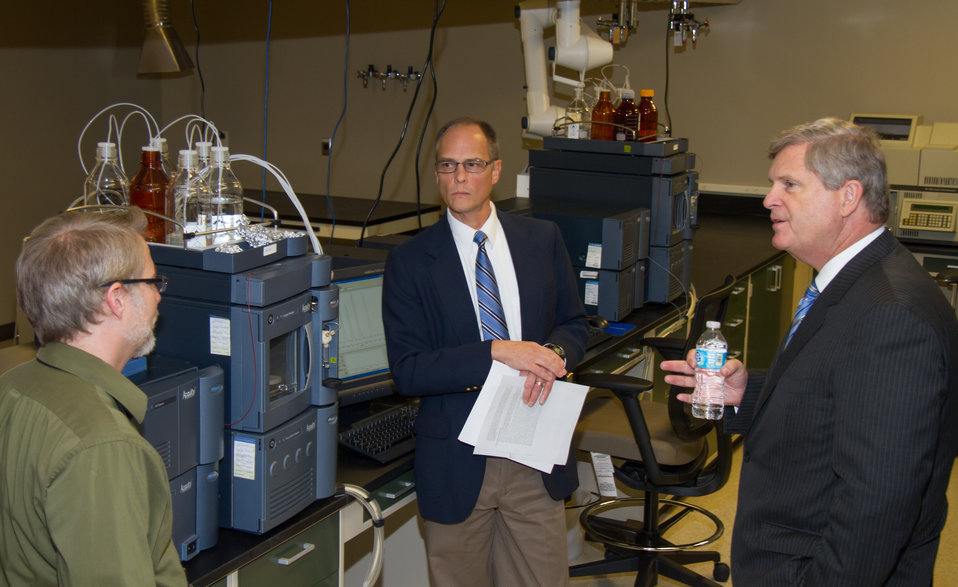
Left to right; Tom Weber, Leader of Grain Inspection, Packers and Stockyards Administration (GIPSA) Trace Analysis Laboratory, explains to Dr. Tim Norden and Agriculture Secretary Tom Vilsack the process of preparing grain samples for pesticide residue analyses in Kansas City, MO, on Wednesday, Oct. 23, 2013.